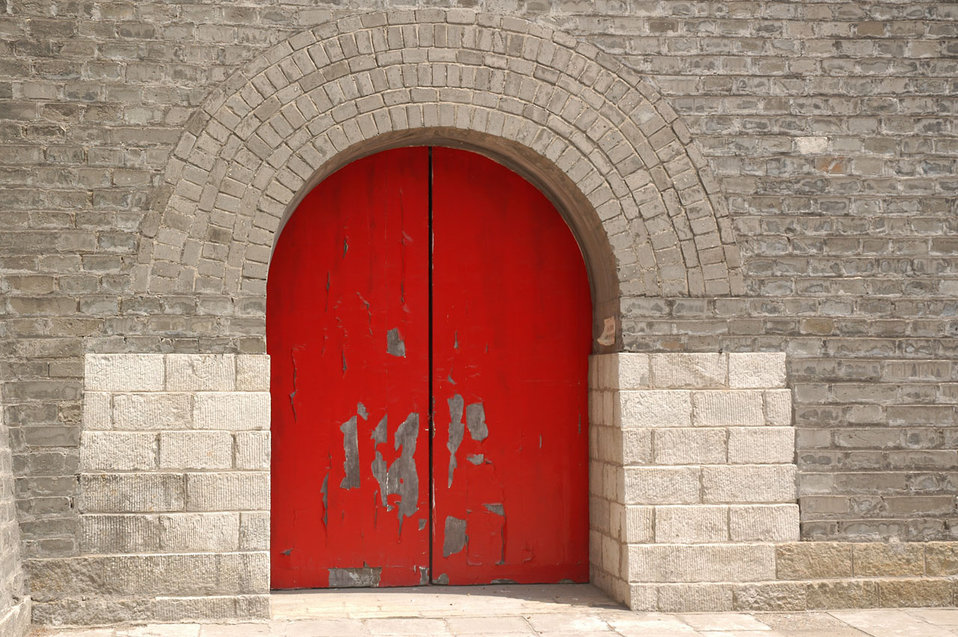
Chinese gate (men).